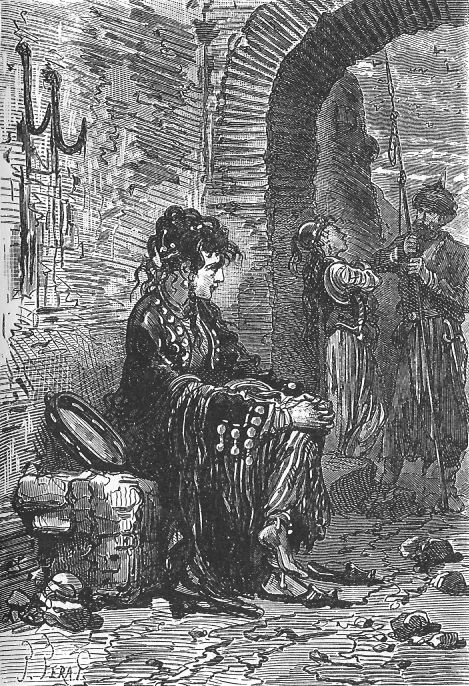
An illustration from the novel 'Michael Strogoff: The Courier of the Czar' by Jules Verne drawn by Jules Férat. Polski: Ilustracja powieści Juliusza Verne'a 'Michał Strogow, kurier carski' autorstwa Julesa Férata. Français : 'Michel Strogoff. Le courier du tzar', Jules Férat. Français : Sangarre était là.